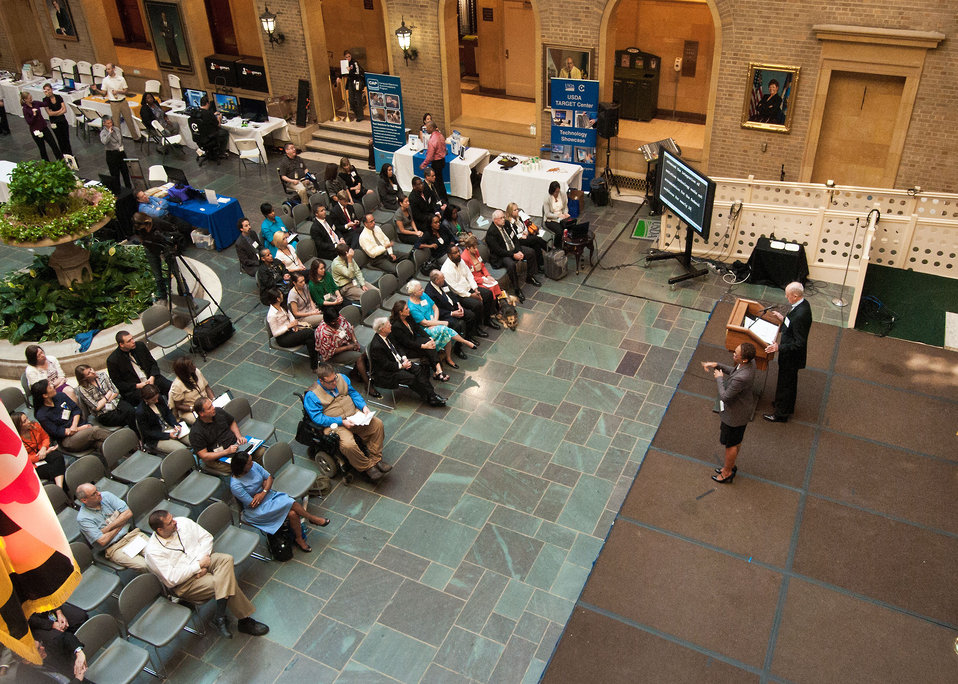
U.S. Department of Agriculture (USDA) Office of Operations (OO) Director for Business Services Morris Tate welcomes employees and guests to USDA’s Departmental Management (DM) Target Center 20th Anniversary at USDA in Washington, D.C. on Thursday, Sept. 13, 2012. The USDA Target Center has provides Assistive Technology to employees with disabilities. The Center has assisted thousands of individuals with disabilities to further contribute to the mission of USDA.